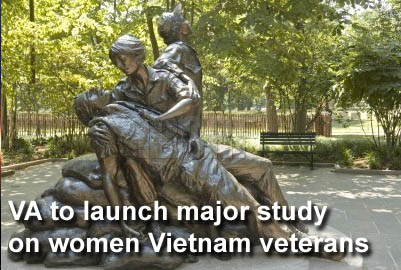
VA launches study of women Vietnam veterans

The Department of Veterans Affairs secretary has announced the launch of a comprehensive study of women Vietnam veterans. The study will begin in November and continue for four years.